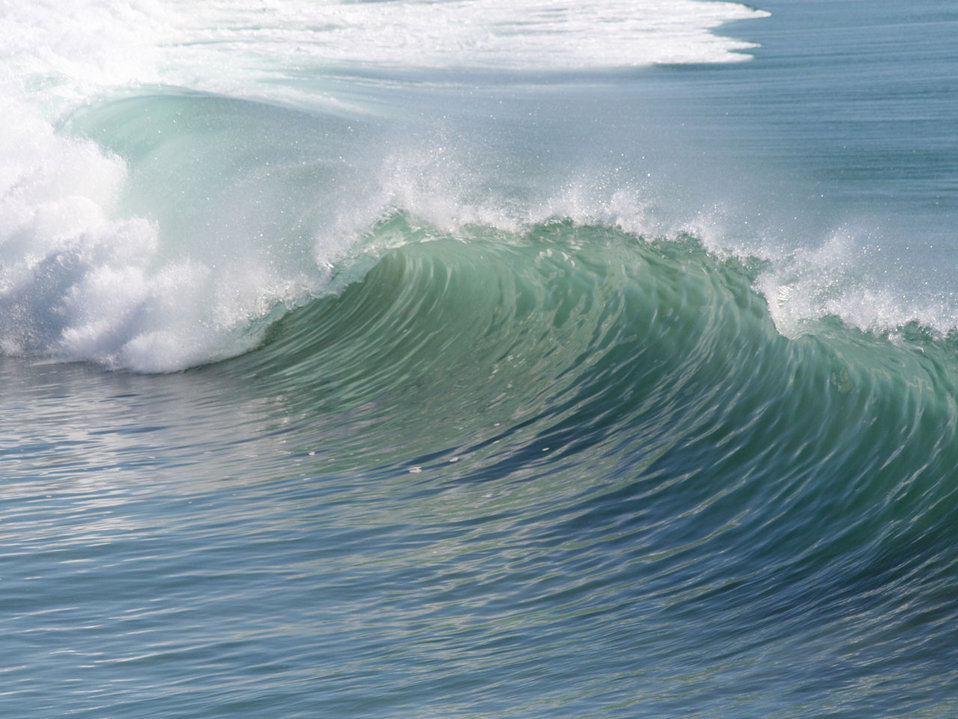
Breaking wave with a nice curl, probably 3-4 feet high, on the south side of huntington beach pier.